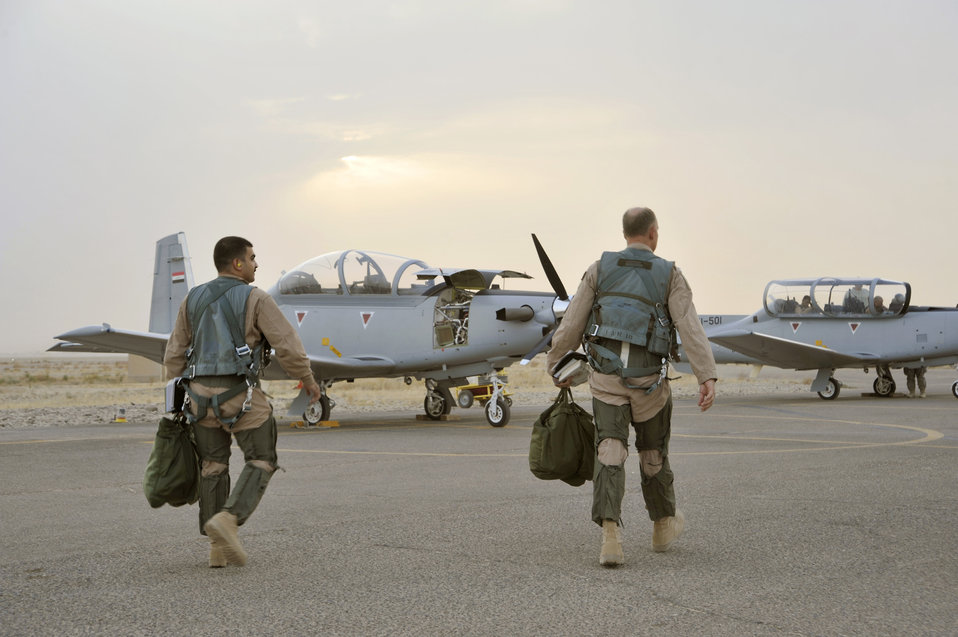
U.S. Airmen train future Iraqi air force pilots

Maj. Thomas Bernard and an Iraq air force student pilot walk to their aircraft before a training flight Sept. 26, 2010, at Tikrit Air Base, Iraq. U.S. Air Force instructor pilots are training and advising the first group of Iraqi air force instructor pilots on the T-6A Texan II as part of the advise, train, assist and equip mission of Operation New Dawn. Once qualified the Iraqi air force pilots will become instructor pilots and continue to train the next generation of pilots. Major Bernard is assigned to the 52nd Expeditionary Flying Training Squadron.